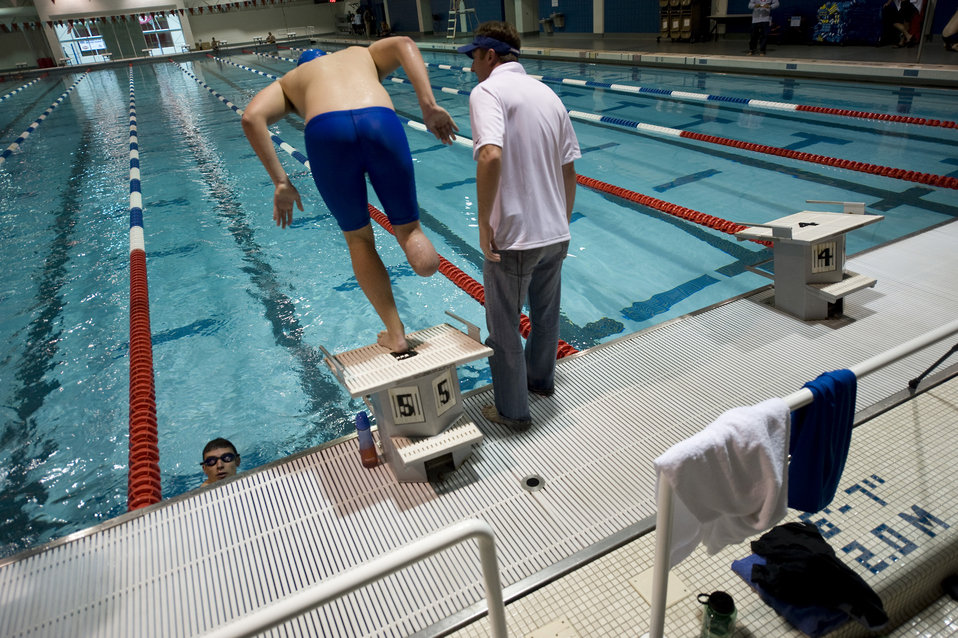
Warrior Games Airmen prepare for competition

Second Lt. Ryan McGuire dives off the starting block during swim practice May 11, 2010, at the Olympic Training Center in Colorado Springs, Colo. Lieutenant McGuire is a below-the-knee-amputee competing in the inaugural Warrior Games through May 14, 2010.